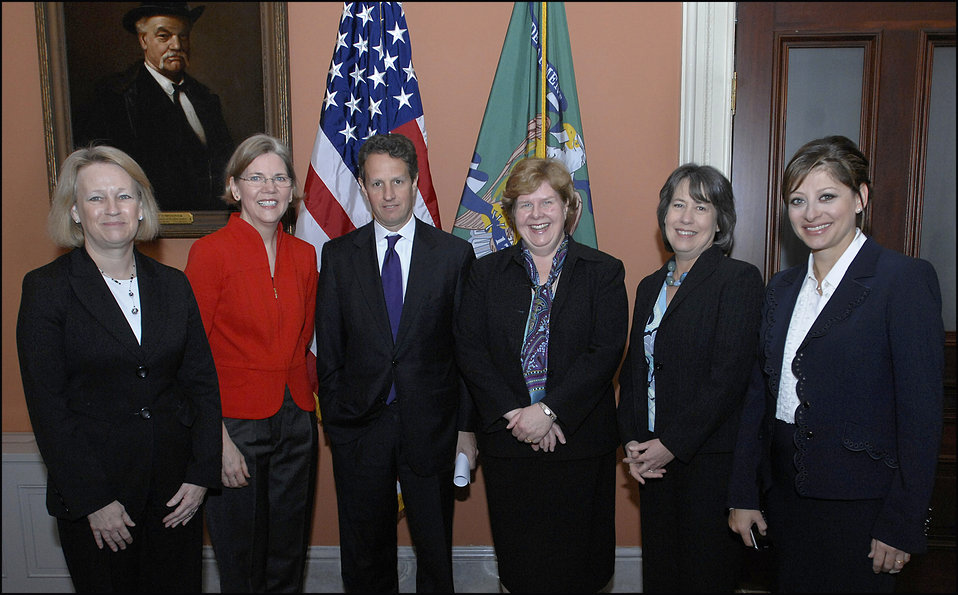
Women in Finance Symposium, 03/29/2010

SEC Chair Mary Schapiro, Congressional Oversight Panel Chair Elizabeth Warren, Treasury Secretary Tim Geithner, Chair of the Council of Economic Advisers Christina Romer, Federal Deposit Insurance Corporation Chairman Sheila Bair, and Maria Bartiromo of CNBC at the Women in Finance Symposium, March 29, 2010.